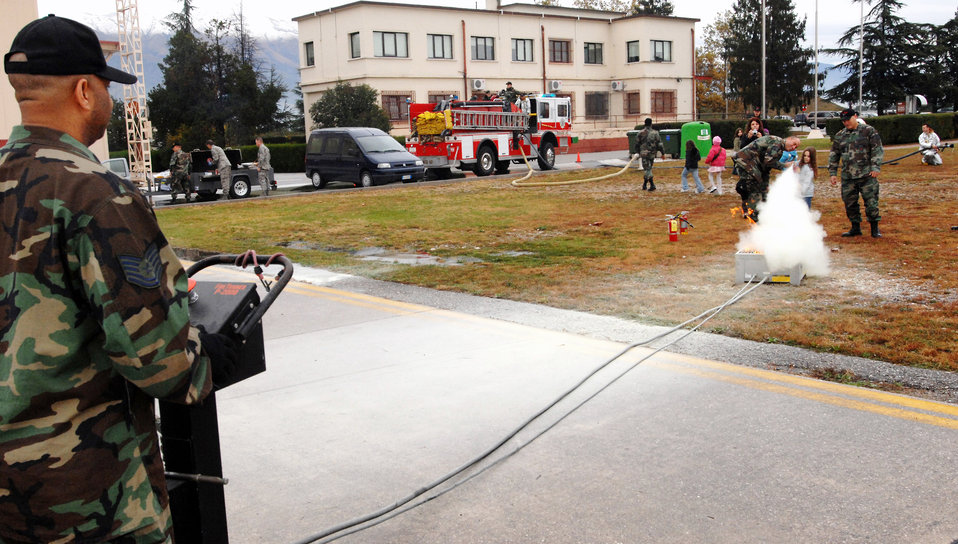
Warrior for a day

31st Civil Engineer Squadron firefighters help 2nd graders learn how to use a fire extinguisher during a children's deployment day Oct. 24 at Aviano Air Base, Italy.